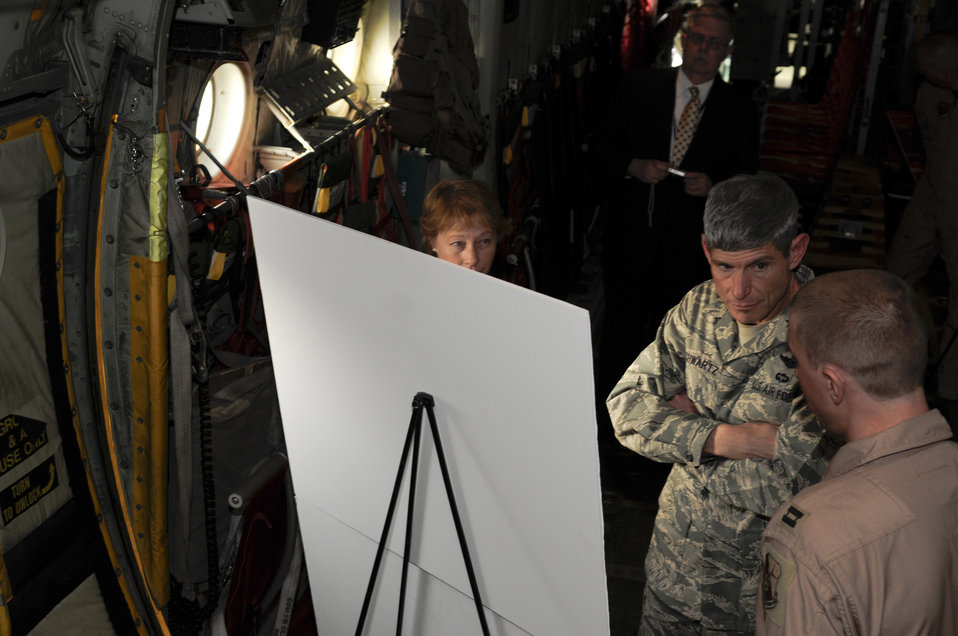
CSAF visits Southwest Asia

Lt. Col. Georgeanne Johnson and Capt. Stephen Boskovich brief Air Force Chief of Staff Gen. Norton Schwartz on their squadron's mission and contribution to the war on terrorism Oct. 20. The 379th Air Expeditionary Wing is General Schwartz's first stop on his first tour of the U.S. Air Forces Central area of responsibility since his appointment as the Air Force chief of staff. Colonel Johnson and Captain Boskovich are both assigned to the 379th Expeditionary Aeromedical Evacuation Squadron.